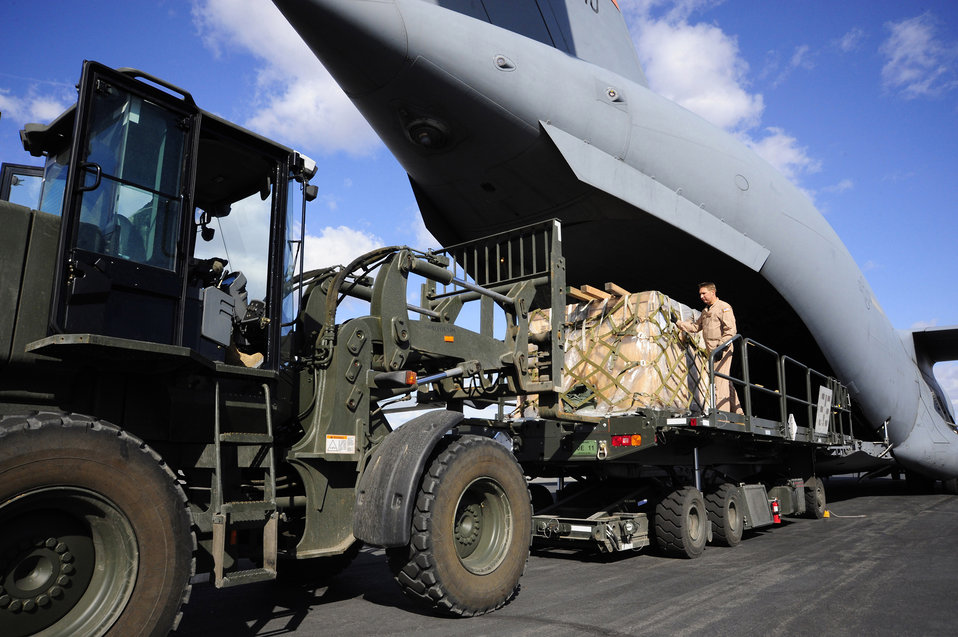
C-17 on a mission

Airmen load equipment and cargo onto a C-17 Globemaster III March 22, 2011, at Grant County International Airport in Moses Lake Wash., before a mission in support of Operation Odyssey Dawn.